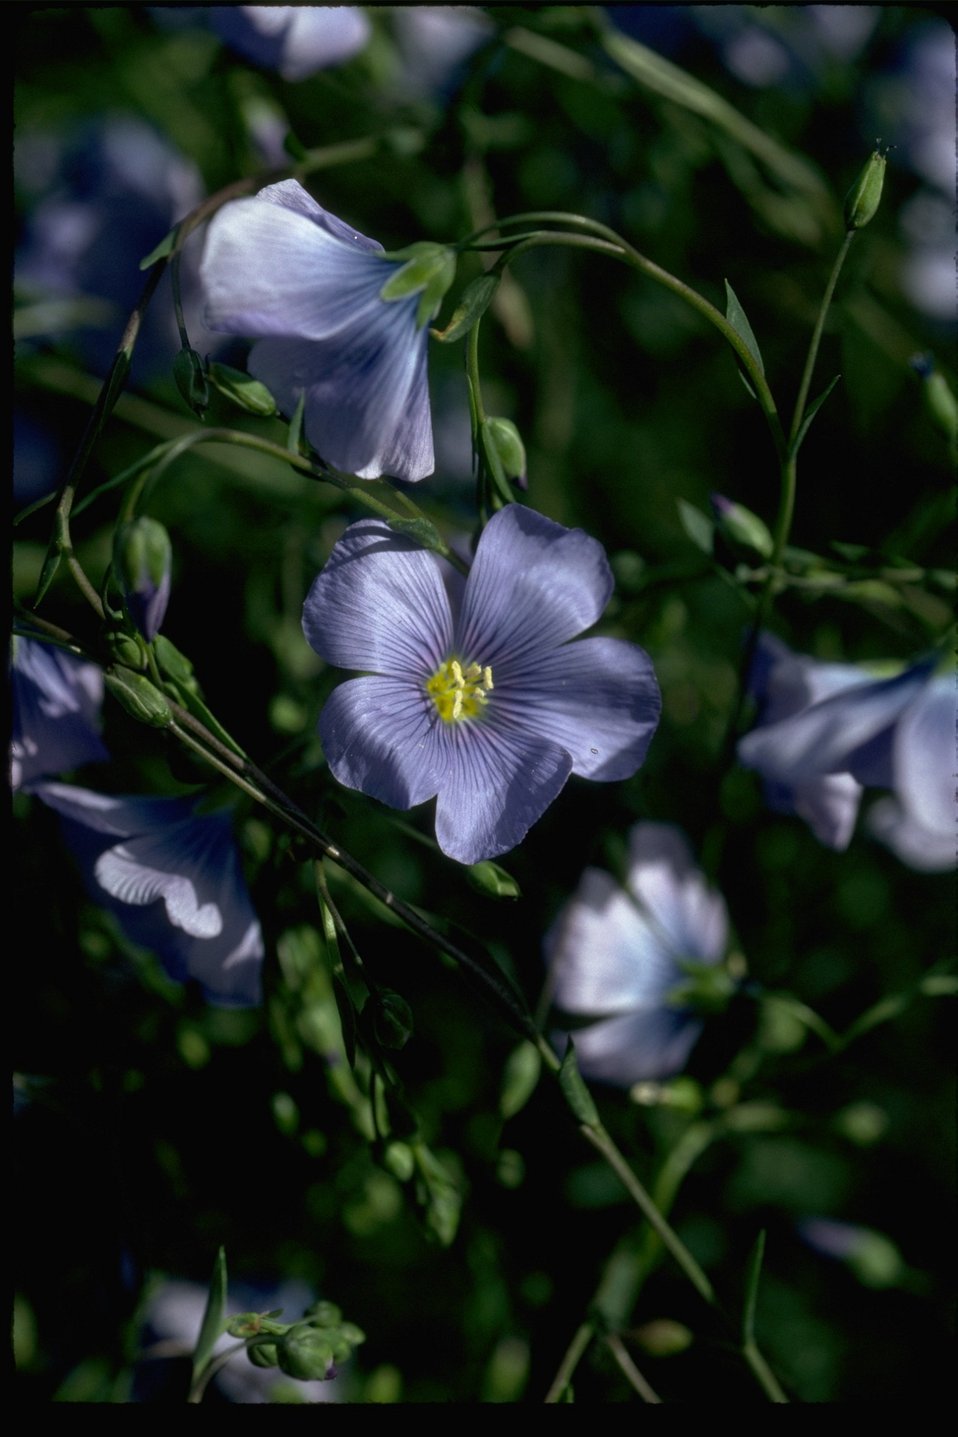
The common Flax, Linum pereune, found on the roadsides near Hines, Oregon.